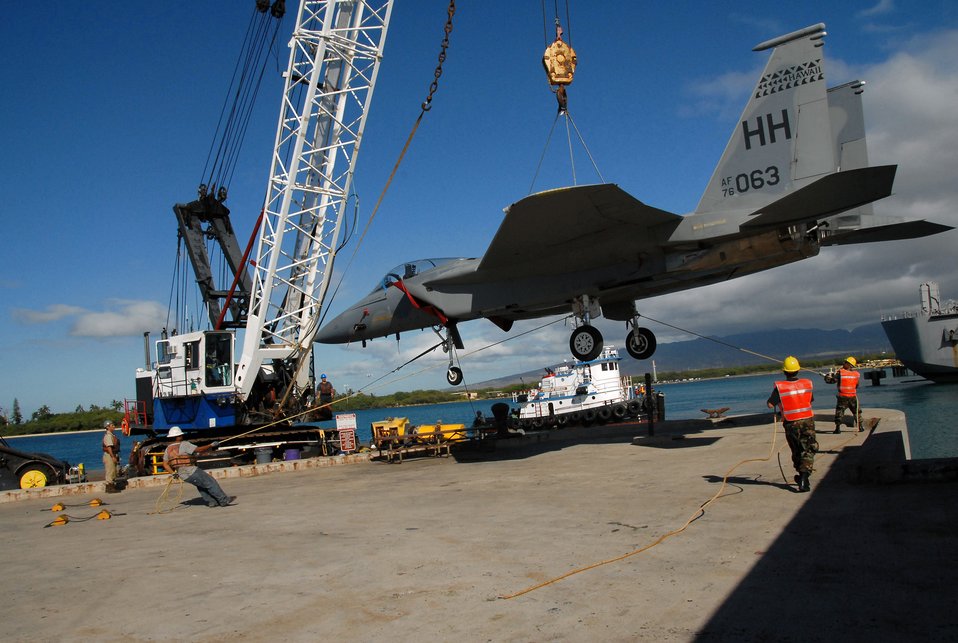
Flying low

The Hawaii Air National Guards F-15 A, number 76-0063, is hoisted onto a barge at Hickam Air Force Base on August 26, 2008. The fighter jet is a donation to the Pacific Aviation museum's collection of historic aircraft. It was delivered to the USAF in 1977 and assigned to the 49th Tactical Fighter Wing (TFW) at Holloman AFB, New An F-15 Eagle is hoisted onto a barge Aug. 26 at Hickam Air Force Base, Hawaii. The fighter jet is a donation to the Pacific Aviation museum's collection of historic aircraft. It was delivered to the Air Force in 1977 and initially assigned to the 49th Tactical Fighter Wing at Holloman AFB, N.M. It flew with the 8th and 9th Fighter Squadrons of the 49th TFW at Holloman AFB where it served as the wing flagship and had painted on its fuselage